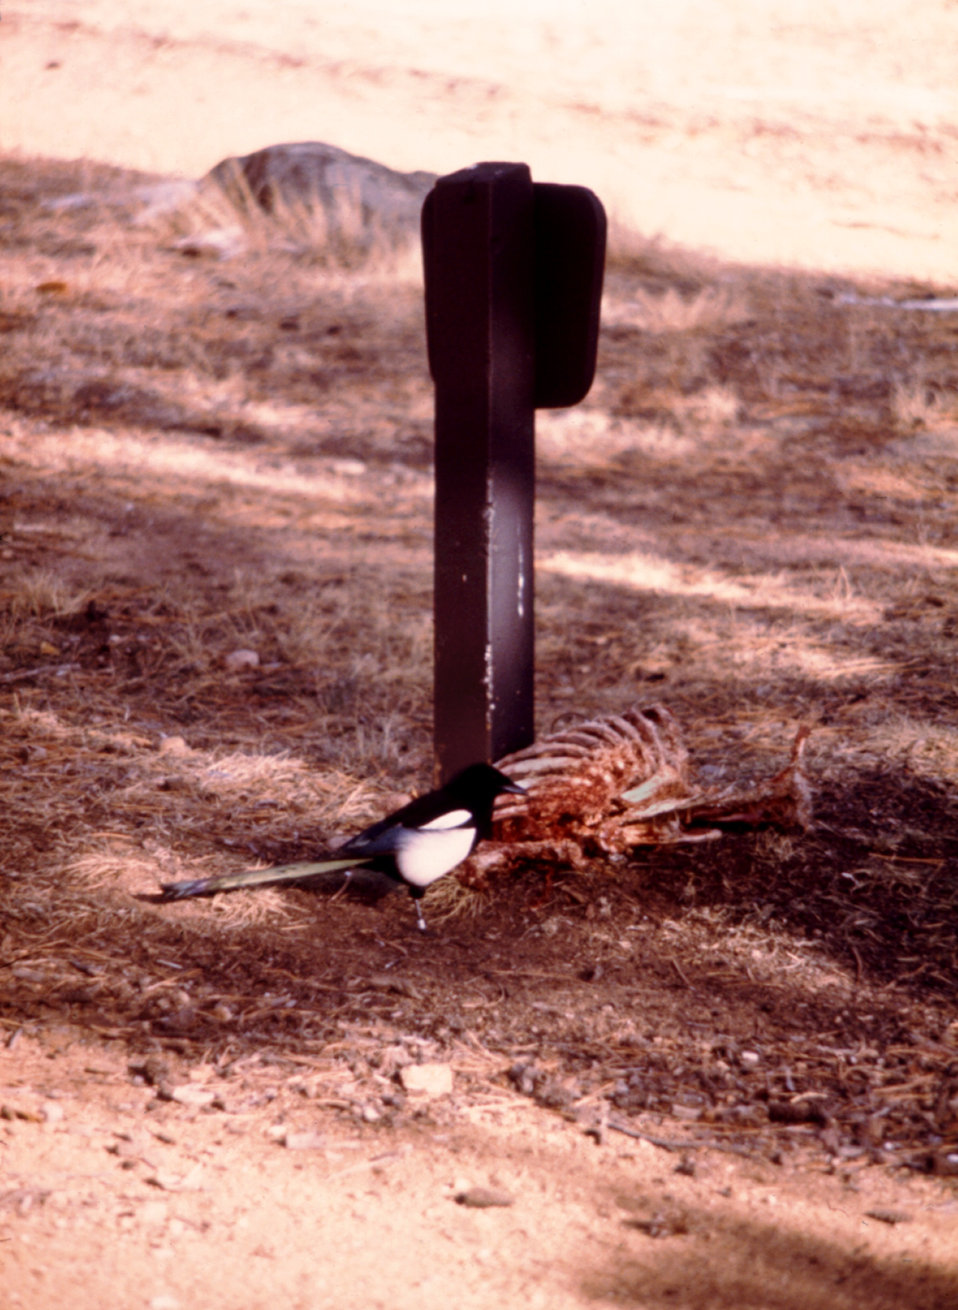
This is a black billed magpie, Pica pica, perched on a deer carcass, during a 1975 plague and Colorado tick fever study.